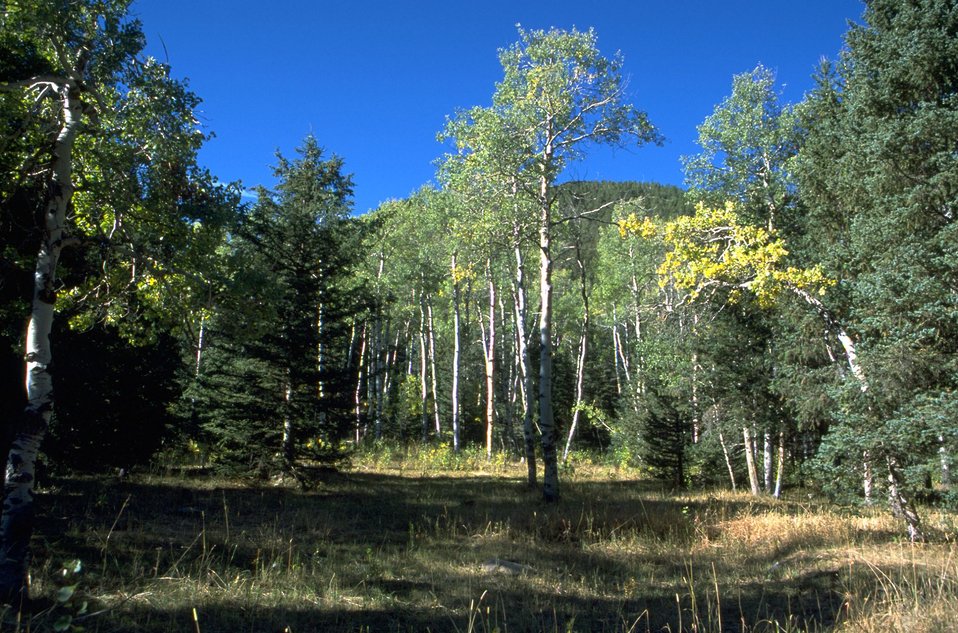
Aspen patch with fir encroachment